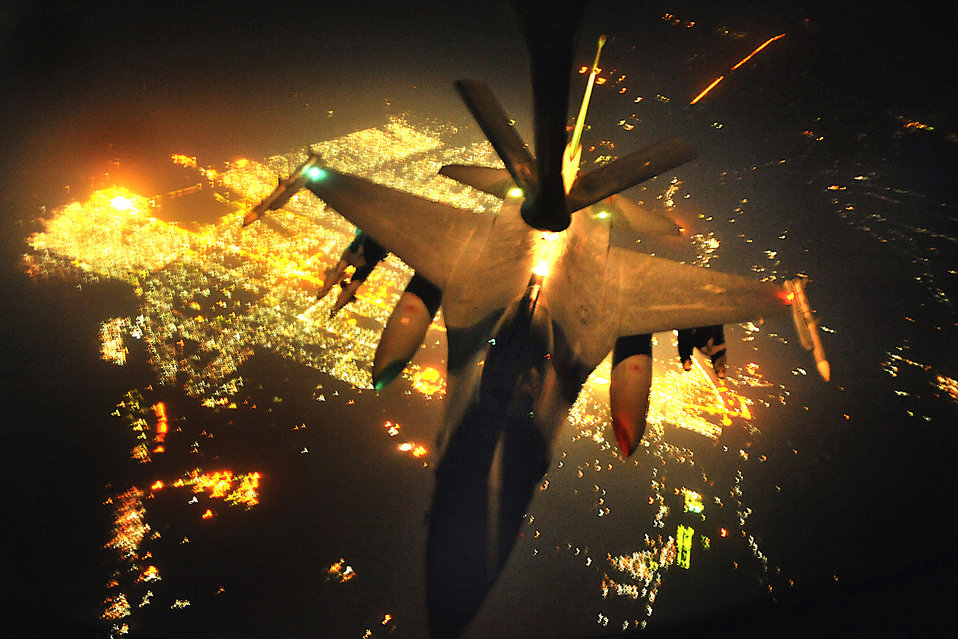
Bird's eye view of Iraq

An F-16 Fighting Falcon aircraft from Joint Base Balad, Iraq, refuels from a KC-135 Stratotanker Sept. 3 during a mission over Iraq.